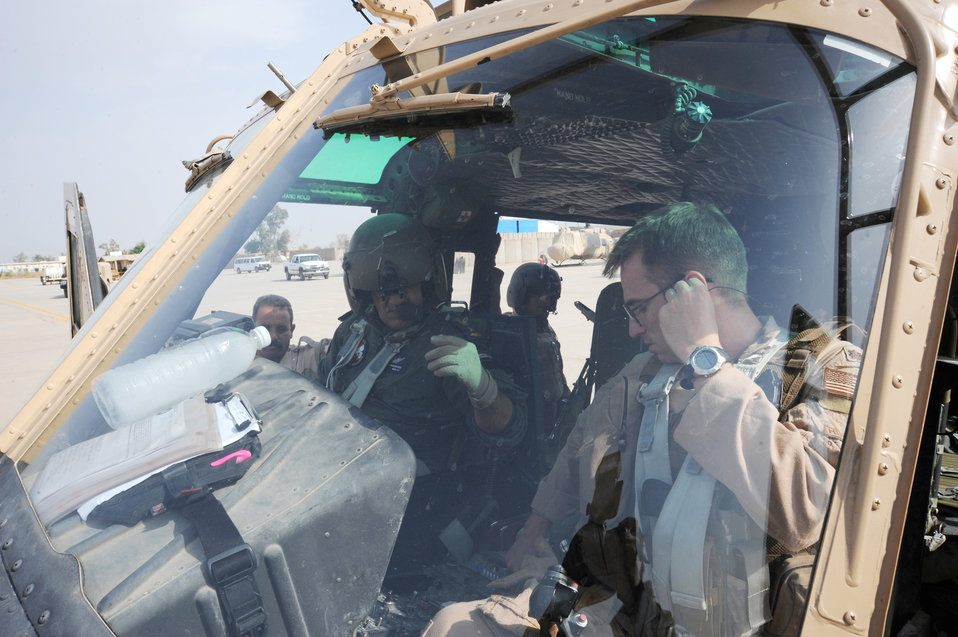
Airmen train, advise, assist Iraqi helicopter pilots

Maj. Jack Swinehart (right), 721st Air Expeditionary Advisory Squadron UH-1H pilot, observes an Iraqi pilot performing preflight procedures here prior to a helicopter training mission Oct. 8, 2009. The major sits side-by-side with Iraqi pilots as they practice approaches, take-offs, landings and aerial maneuver formation flying procedures. U.S. Air Force instructor pilots assigned to the 721st AEAS train, advise and assist Iraqi helicopter pilots around the clock, helping the Iraqis develop their own air force. Major Swinehart is deployed from and a native of Fort Rucker, Ala.